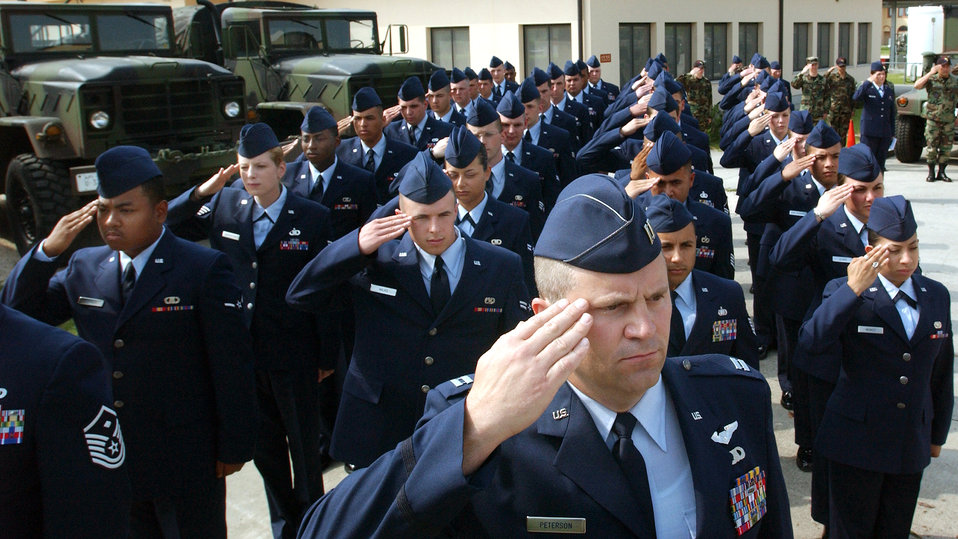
In remembrance

Airmen of the 603d Air Control Squadron present arms during a remembrance ceremony at Aviano Air Base, Italy, on Friday, May 19, 2006. The ceremony was dedicated to five squadron Airmen who made the ultimate sacrifice for their country.